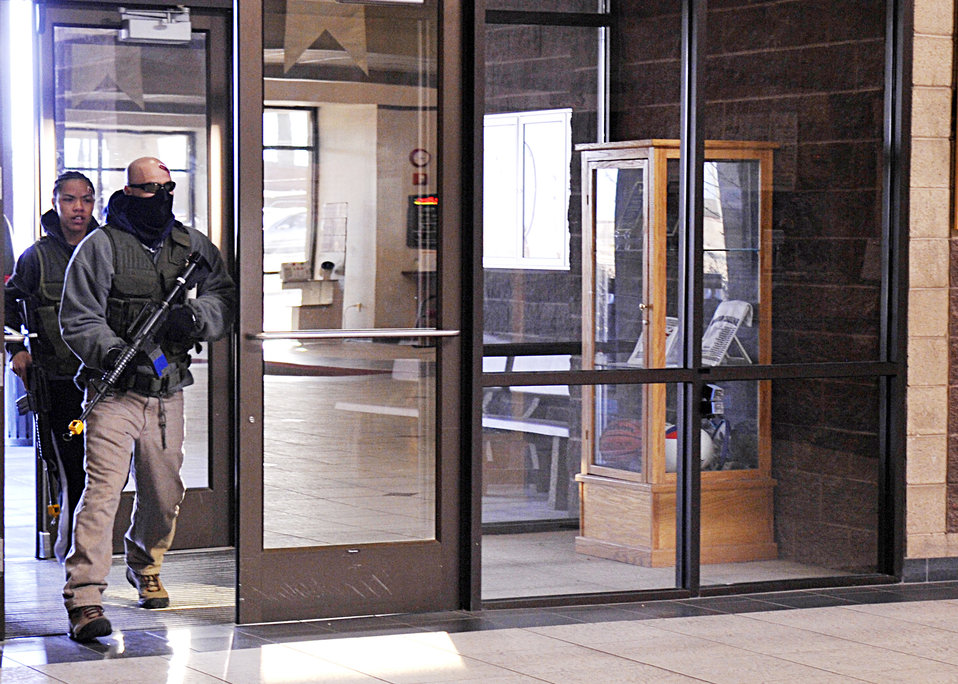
Holloman Airmen train for worst in active shooter exercise

Two armed gunmen, played by Tech. Sgt. David Loera and Senior Airman Lauren Moss, enter the Domenici Fitness and Sports Center March 11, 2010, at Holloman Air Force Base, N.M. The active shooter exercise evaluated how well base members are prepared for an active shooter scenario on the installation. Sergeant Lorea is assigned to the 49th Material Maintenance Group, and Airman Moss is assigned to the 49th Aeromedical Dental Squadron.